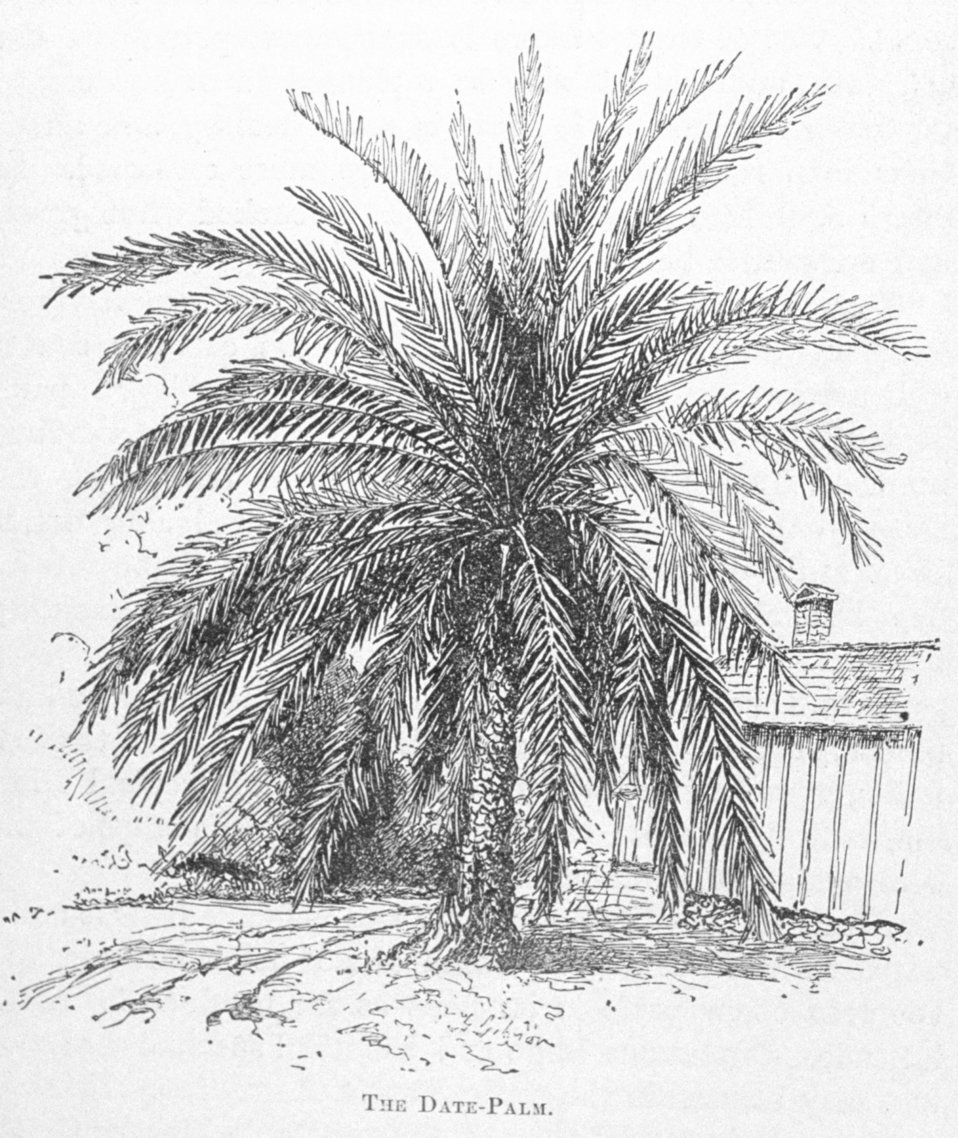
The Date-Palm - in 'Florida for Tourists, Invalids, and Settlers' by George M. Barbour, 1881. Library Call No. F316 .B23 1881.